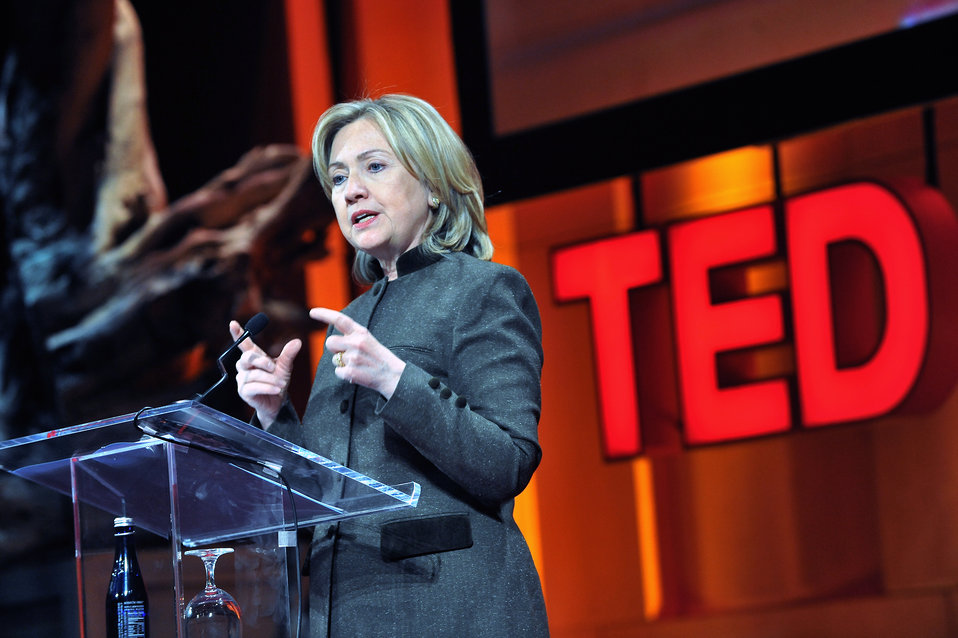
Secretary Clinton Delivers Remarks

U.S. Secretary of State Hillary Rodham Clinton delivers remarks at the TedWomen Conference at Ronald Reagan Building-Amphitheater in Washington, D.C., on December 8, 2010.